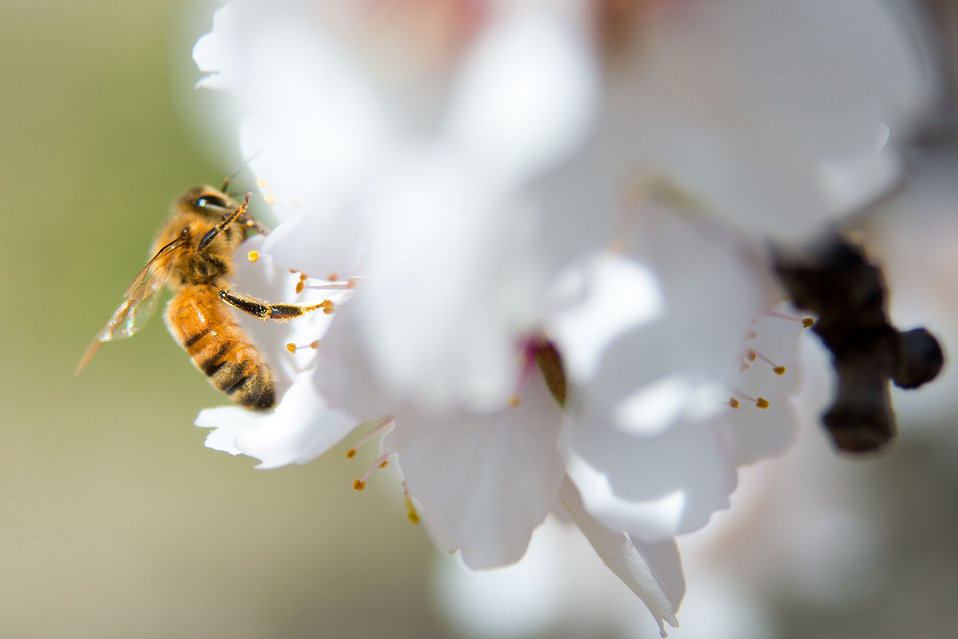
A bee pollinates an blossom in the almond orchard on Paramount Farms in McFarland, CA on Tuesday, Feb. 25, 2014. Bees are one of nature’s many pollinators for flowers and crops and are crucial in production for fruits and vegetables. Some of the crops pollinated by bees are apples, squash, and almonds. Honeybees are responsible for pollinating approximately $15 billion worth of crops in the U. S. each year. The U. S. Department of Agriculture (USDA) Agricultural Research Service (ARS) and Natural Resource Conservation Service (NRCS) are working on ways to mitigate the decline of the bee population by coordinating pollination research, conservation, and education among USDA agencies and their partners.